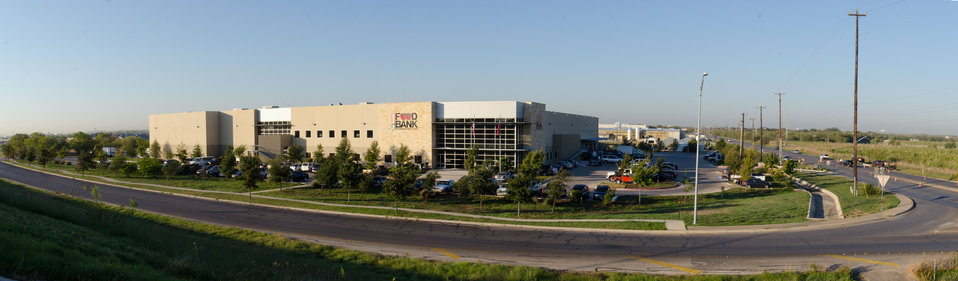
(Virtual Panorama) The San Antonio Food Bank (SAFB) is a non-profit organization that serves as a clearinghouse by receiving and storing truckloads of donated food, produce, and other grocery products in San Antonio TX, on Monday, October 31, 2011. SAFB distributes these items to over 500 service agencies that help people in need.
“We couldn’t do what we do without our partnership with USDA’” said President and CEO Eric Cooper. He continues, “We are privileged in partnering (with the USDA) to feeding kids, through the summer, with the Summer Food Service Program, and throughout the year, with the Child and Adult Care Feeding Program (CACFP). Then in our approach to feeding seniors, we partner with USDA in the Commodities Supplemental Food Program (CSFP), and the Senior Farmer’s Market (Nutrition) Program. And then work to bring all our (needy) parties together with our Supplemental Nutrition Assistance Program (SNAP) Outreach. You know, once families have access to food we believe it is important to educate them. Through the support of the SNAP-Education Program we are able to educate them during their time of need. With this comprehensive approach we are really able to get the right food, at the right amount, at the right time, to needy families throughout our community – which allows us to feed the fifty-eight thousand we do, each week.”
SAFB serves 16 counties in Southwest Texas and states, “Nearly one out of every four children and one out of every five adults in Southwest Texas lives in poverty and has difficulty meeting basic nutritional needs.” According to SAFB, sixty-five percent of the people requesting emergency food have children. “Additionally, the senior citizens and those living on a fixed income generally have limited funds for a consistent grocery budget.”
San Antonio is the seventh largest city in the nation with surrounding farms and ranches near its rivers and water supplies. When available they provide fresh surplus produce. Other commodities come from the food industry and manufacturers. The major food brand companies that for various reasons have surplus commodities donate it to SAFB.
The United States Department of Agriculture donates commodities through programs such as The Emergency Food Assistance Program (TEFAP), while Texas farmers supply fresh produce to their Fresh Produce Program.
Public donations come in the form of money, food, volunteer time, and advocacy. Their fleet of trucks to pickup and deliver food as needed. USDA photo illustration by Lance Cheung